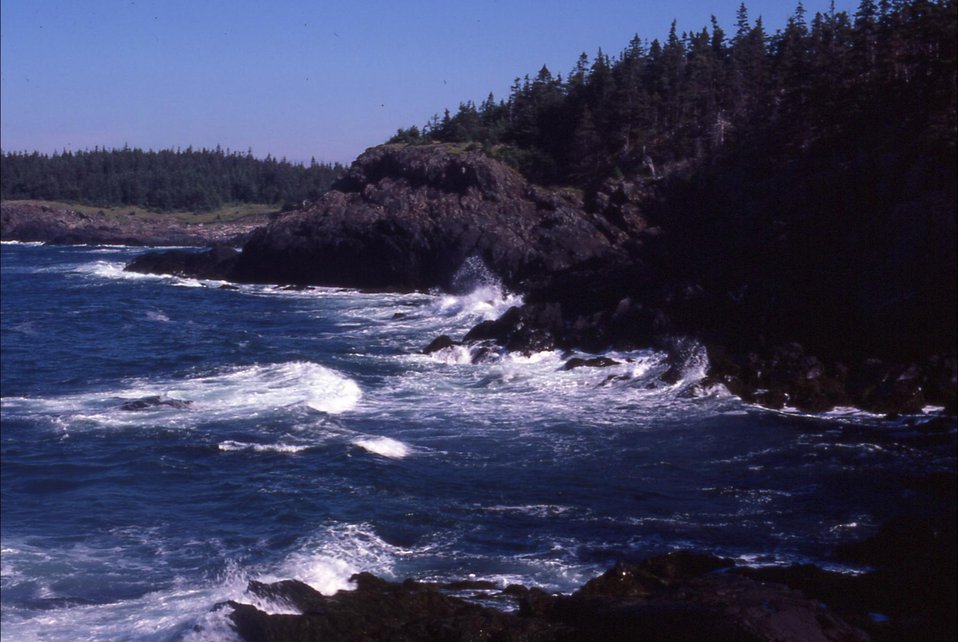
Cross Island rugged shore at Maine Coastal Island National Wildlife Refuge